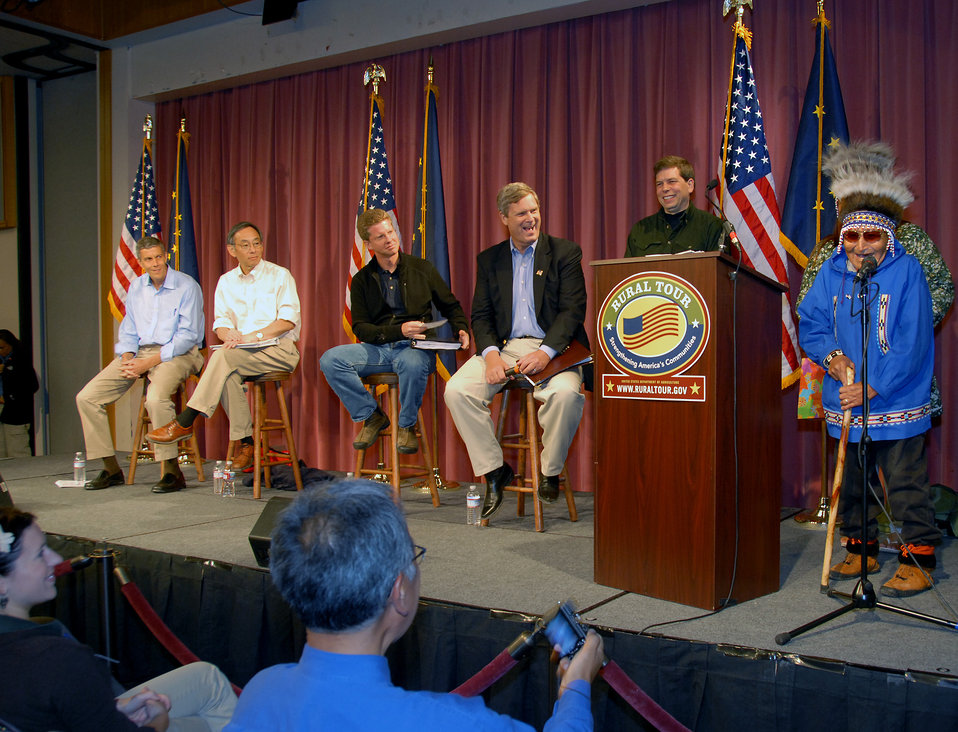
Rural Tour 0050

Rural Tour Alaska Aug 2009